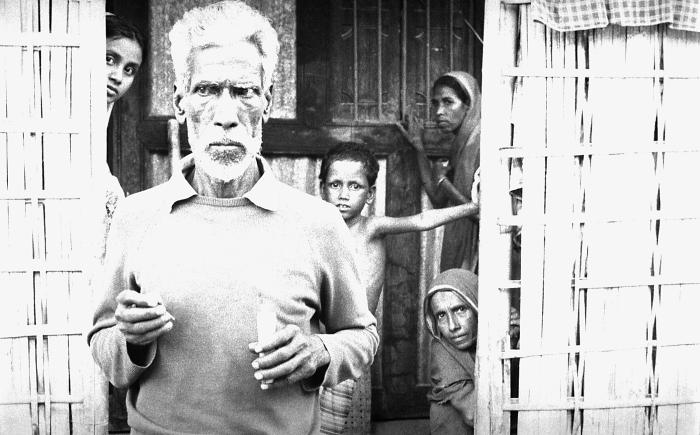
This man was held in high regard as a community 'vaccinator'. He was holding vaccination paraphernalia consisting of a bifurcated smallpox needle, and some vaccine. This photograph provided by Dr. Stan Foster, and captured by Pierre Claquin, M.D., B.A.C., who at the time was a member of the World Health Organization's Smallpox Eradication Program. It was part of a series photographed by former E.I.S. officer, Stanley O. Foster M.D., M.P.H., and was one of a series entitled 'The Story of One Smallpox Jeep', which depicted the travails faced by the jeep, and its occupants of public health practitioners, as they road through the Bangladesh countryside in an attempt to eradicate smallpox from the country.